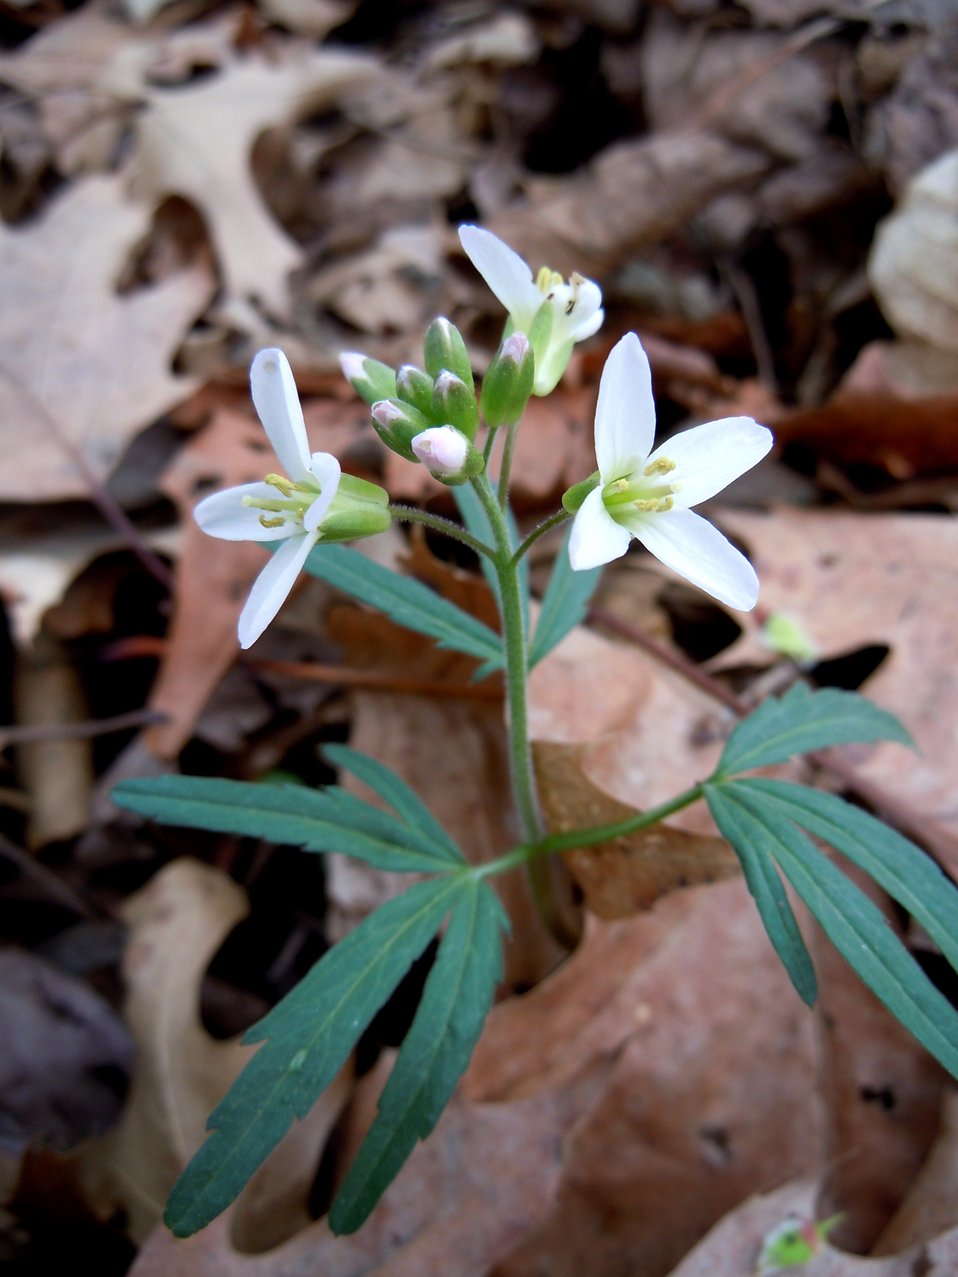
Cutleaf Toothwort